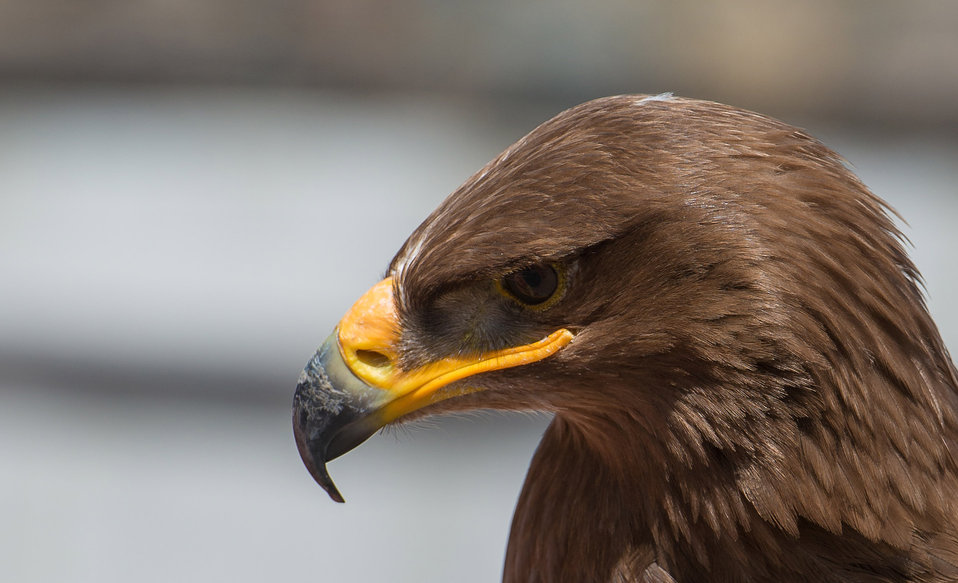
Eagle - detail.